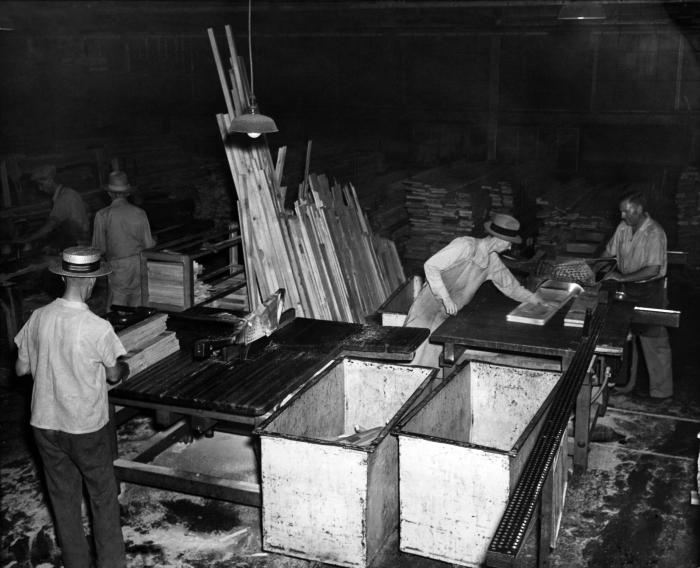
This September, 1947 photograph was provided by the Center for Disease Control's (CDC), National Institute for Occupational Safety and Health (NIOSH). The image depicted a number of men who were in the process of cutting lumber inside what was a Salus, West Virginia woodshop. The lumber being processed was to be used to construct wooden boxes. Of note, is the fact that the cutting saws were outfitted with what appeared to be safety guards, however, the carpenters themselves were ill equipped, lacking safety goggles, and a filterized breathing apparatus. Whether or not the power saws were equipped with an emergency cut-off switch could not be determined from this photograph.In gaining a better understanding of workplace hazards, through hands-on and on-site information acquisition, protocol-formulating bodies such as NIOSH, are better able to create a safer workplace through substantiation of appropriate safety regulations.